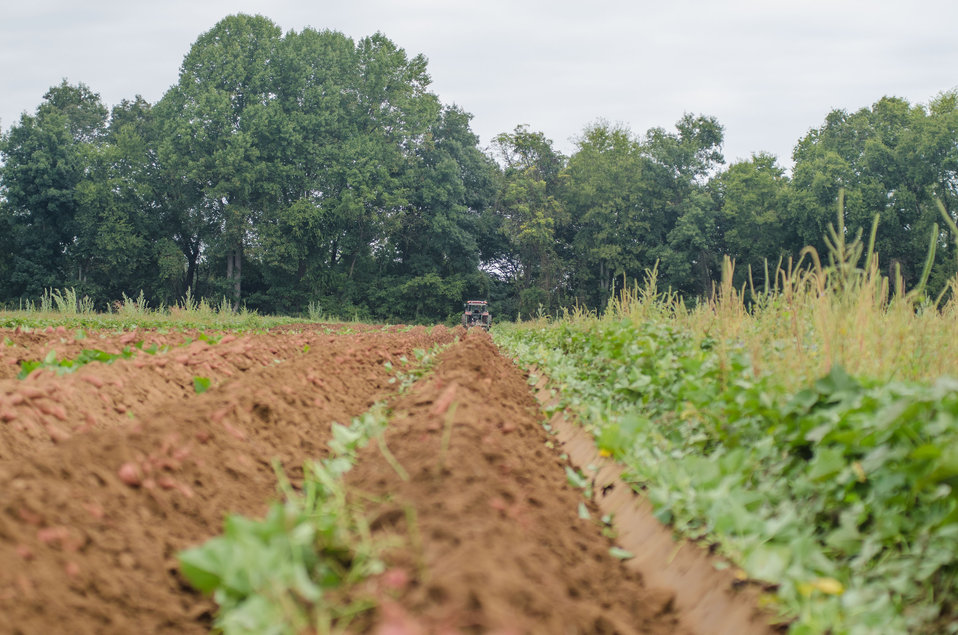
Good risk management tools aid in conservation efforts and help protect beautiful views like this for the next generation.